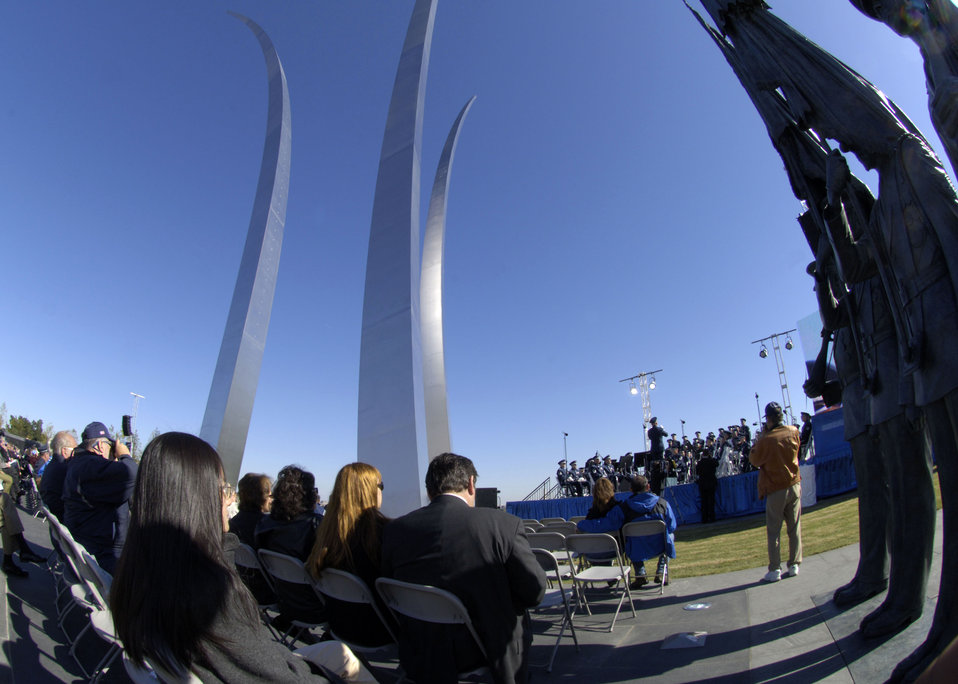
Wreath Ceremony

Hundreds gathered at the base of the new Air Force Memorial as Secretary of the Air Force Michael W. Wynne officially closed the Air Force Memorial commemoration with a wreath laying ceremony in Arlington, Va., Oct. 15, 2006. On behalf of all American citizens President George W. Bush accepted the Air Force Memorial from Air Force Memorial Foundation Chairman Ross Perot Jr. during the previous day's dedication ceremony at the base of the Air Force Memorial that overlooks the Pentagon. Designed by the late James Ingo Freed the memorial with its three soaring spires inspired by the U.S. Air Force Thunderbirds bomb burst manuever, pays tribute to and honors the patriotic men and women of the U.S. Air Force and its predeccessor organizations. An open house was held near the Pentagon in conjunction with the dedication ceremony which featured performances by the U.S. Air Force Band, the U.S. Air Force Honor Guard drill team, and culminated with a concert featuring country music performer LeeAnn Womack.